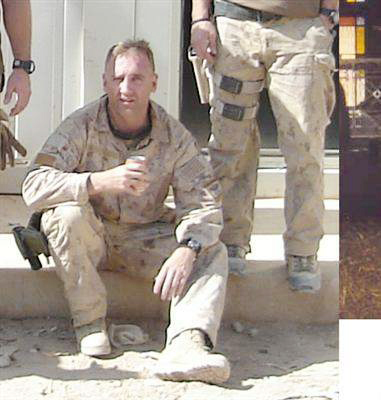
Air Force officials remain vigilant in PTSD treatment

Lt. Col. Greg Harbin after a 72-hour operation with NATO units in Afghanistan.